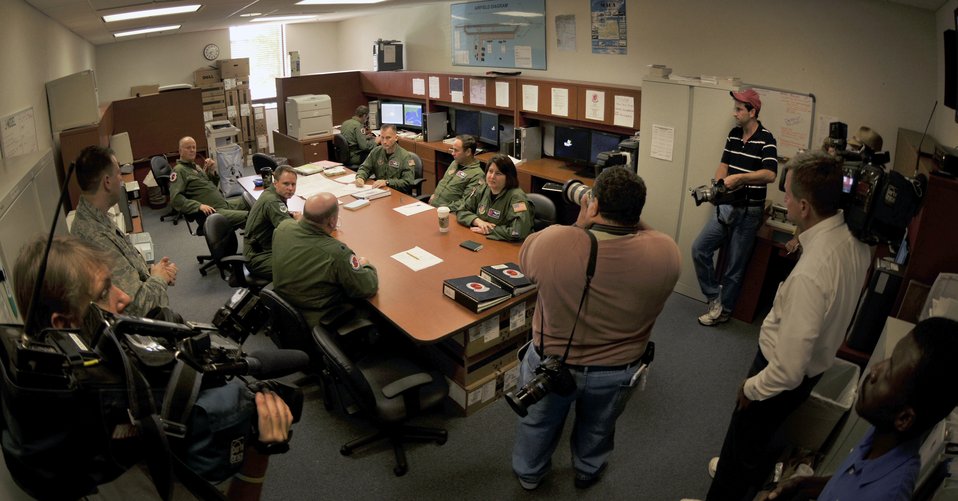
Hurricane Hunters track Ike

News media representatives report on an aircrew as they prepare for a mission into Hurricane Ike Sept. 10 at Keesler Air Force Base, Miss. The crew of reservists left with reporters from the Associated Press, WKRG and WVTM onboard at 10:30 a.m. to locate the center of Ike and to gather data used by forecasters at the National Hurricane Center to better predict the path and intensity of storms.